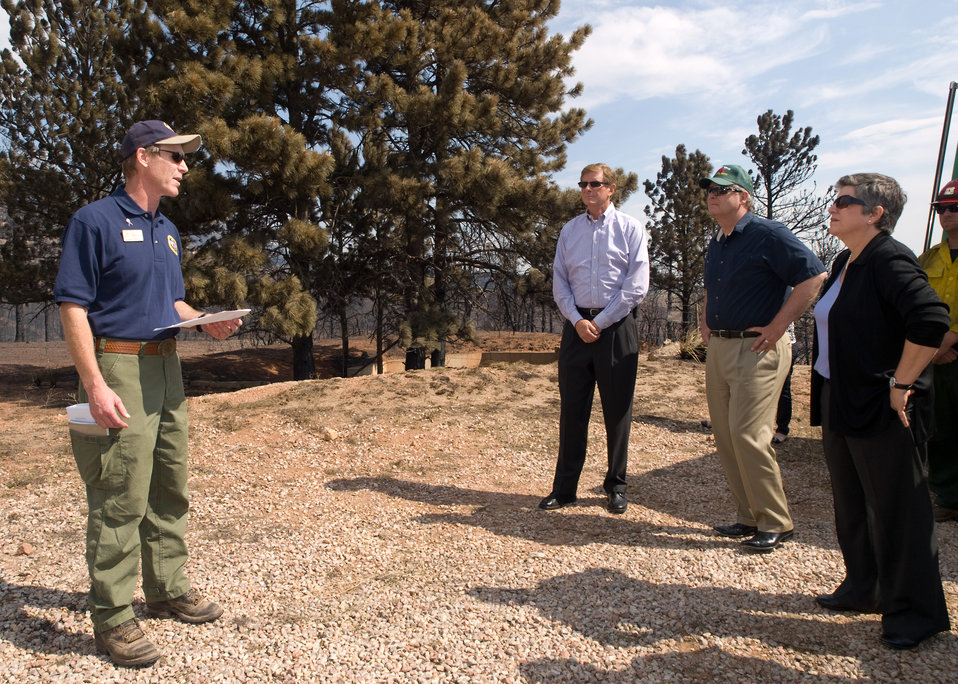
U.S. Forest Service Fire Incident Commander Rich Harvey briefs Agriculture Secretary Tom Vilsack (center) and Homeland Securty Secretary Janet Nalolitano about the Waldo Canyon Fire near Colorado Springs, CO on July 3, 2012. U.S.Forest Service photo by Kari Greer.